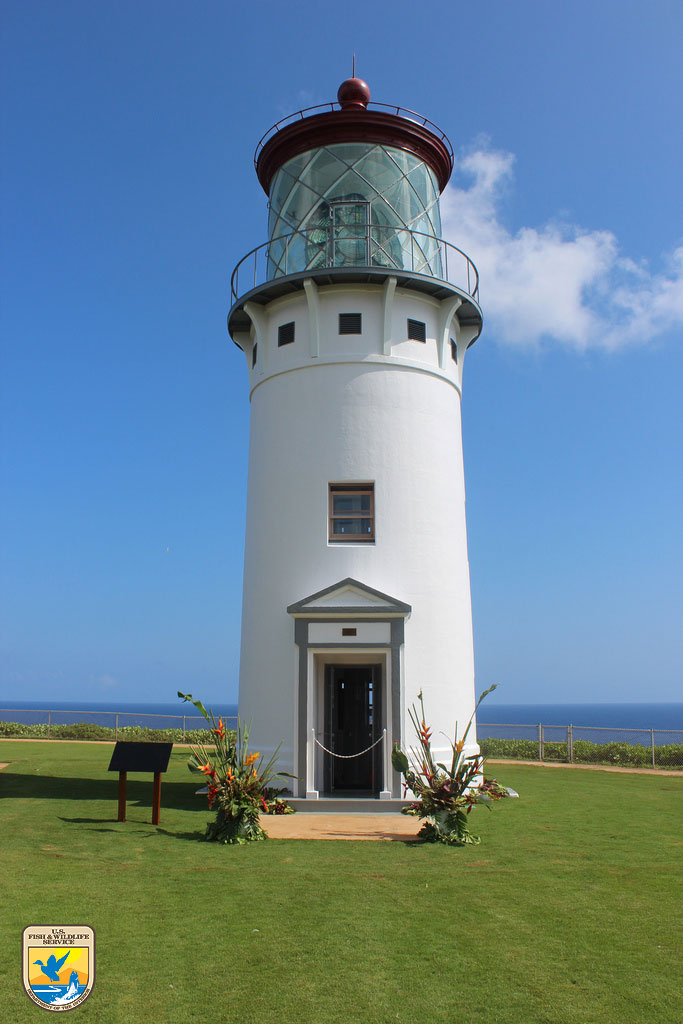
Daniel K. Inouye Kilauea Point Lighthouse - Pacific Region

The restored Daniel K. Inouye Kilauea Point Lighthouse before the official reopening ceremony on May 1, 2013.